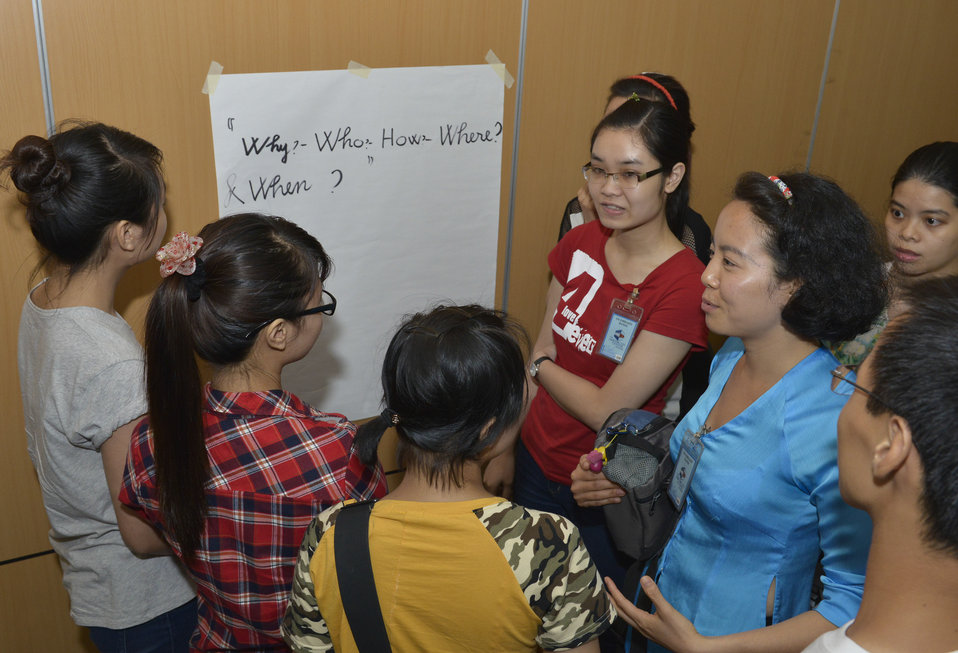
MTV Exit Talk to Engage Students in the Fight against Human Trafficking

Hanoi. June 5, 2014.